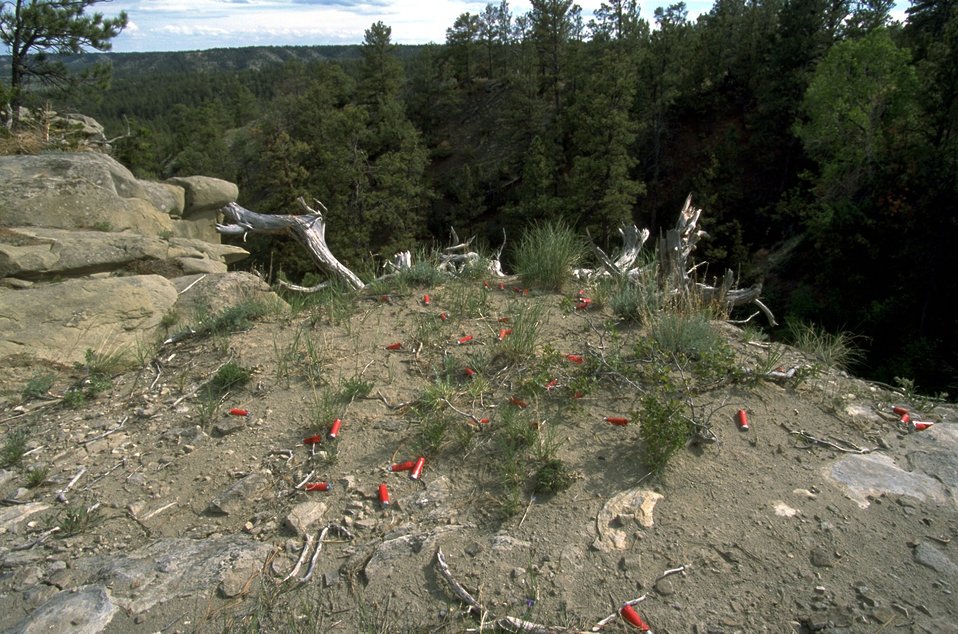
Spent shotgun shells at a target shooting area in the Acton Recreation Area